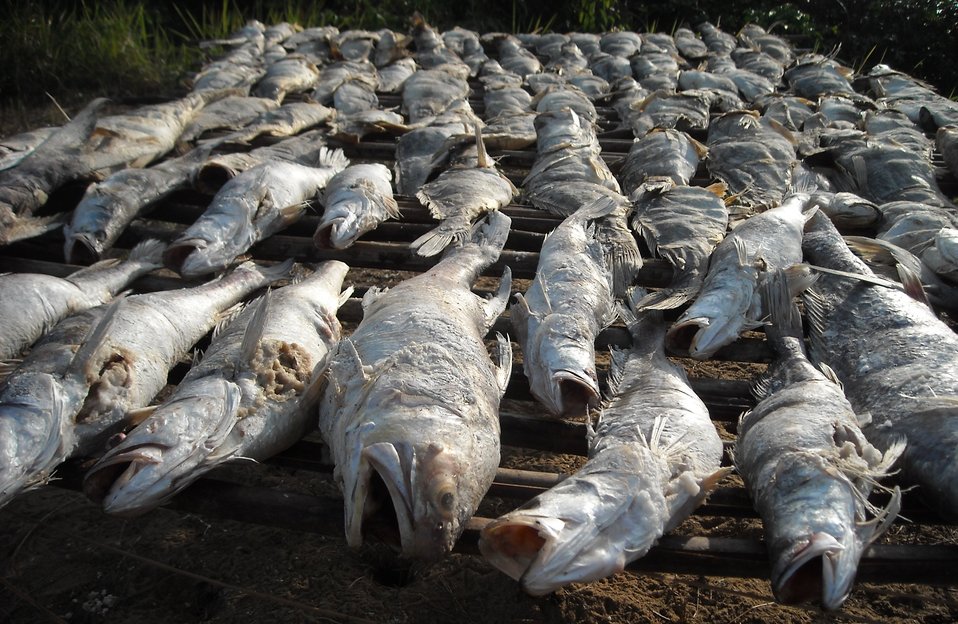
Fish drying on rack in artisinal fishing village